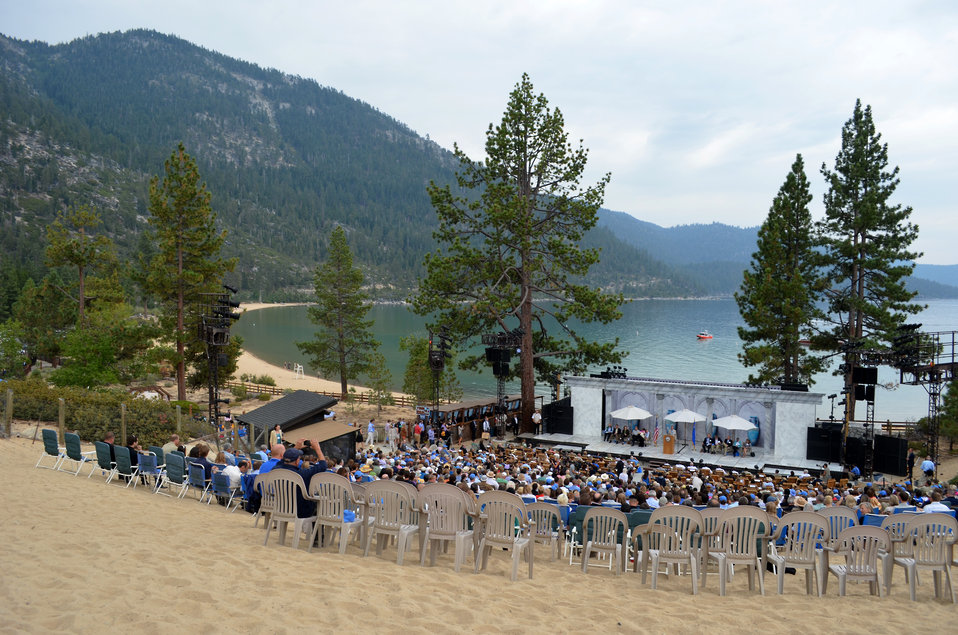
17th Annual Lake Tahoe Summit

130819-A-QE256-002 - The 17th Annual Lake Tahoe Summit took place Aug. 19, 2013 at Sand Harbor State Park, Nev. The U.S. Army Corps of Engineers joined former Vice President Al Gore, U.S. Sen. Harry Reid of Nevada, U.S. Sen. Diane Feinstein of California, California Governor Jerry Brown, and Nevada Governor Brian Sandoval to celebrate progress in restoring Lake Tahoe. The Corps is one of many agencies working to help “keep Tahoe blue” through various ecosystem restoration projects.